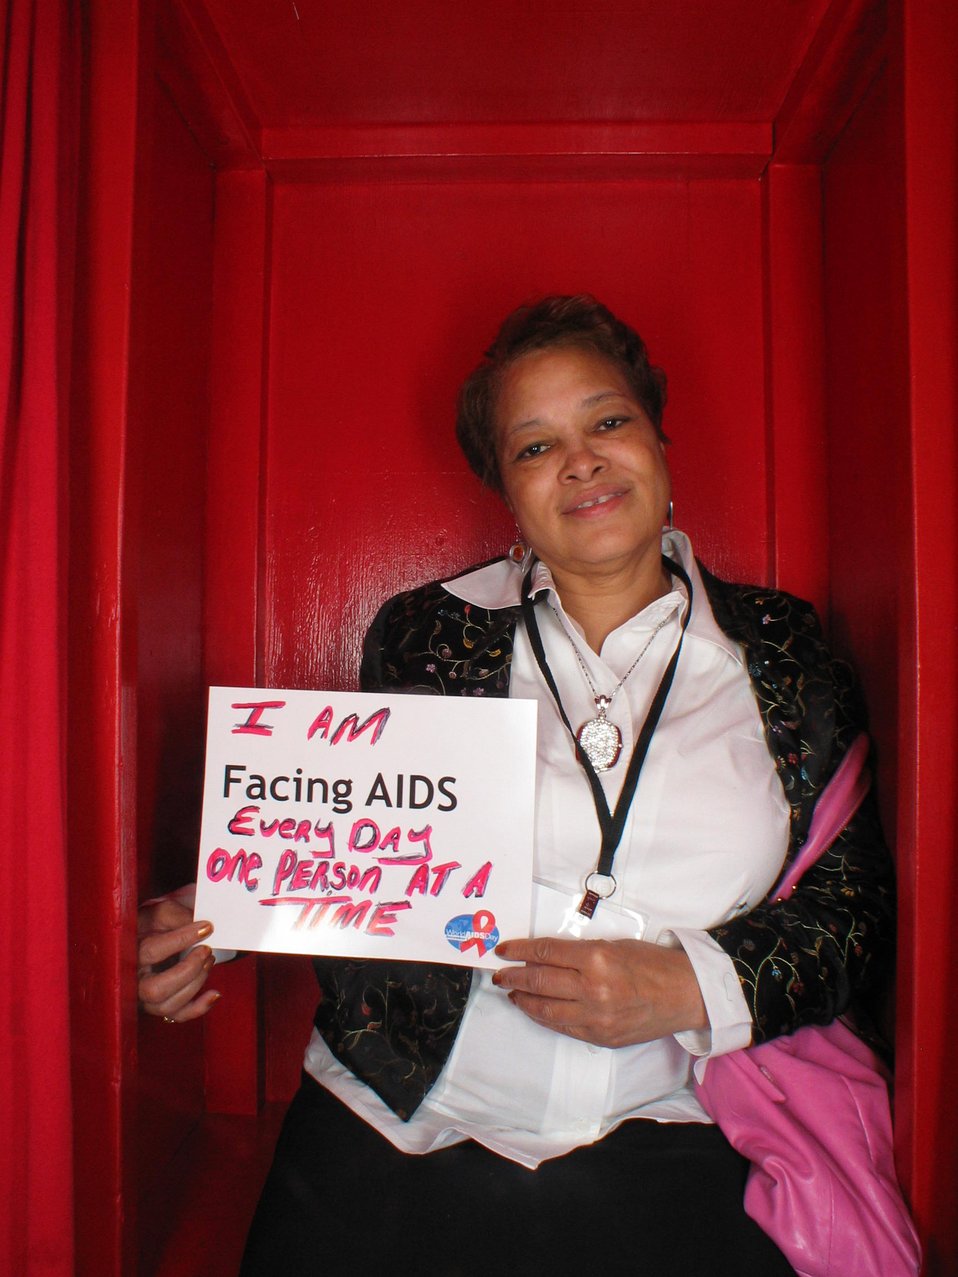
I am Facing AIDS every day one person at a time.